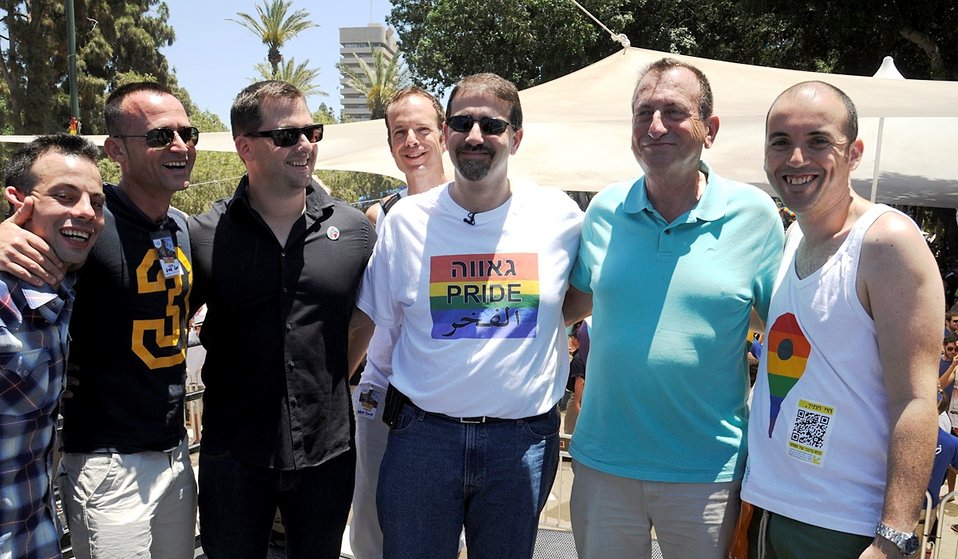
Ambassador Shapiro Participates in the Gay Pride Parade

U.S. Ambassador to Israel Dan Shapiro participates in the Gay Pride Parade in Tel Aviv, Israel, on June 8, 2012.